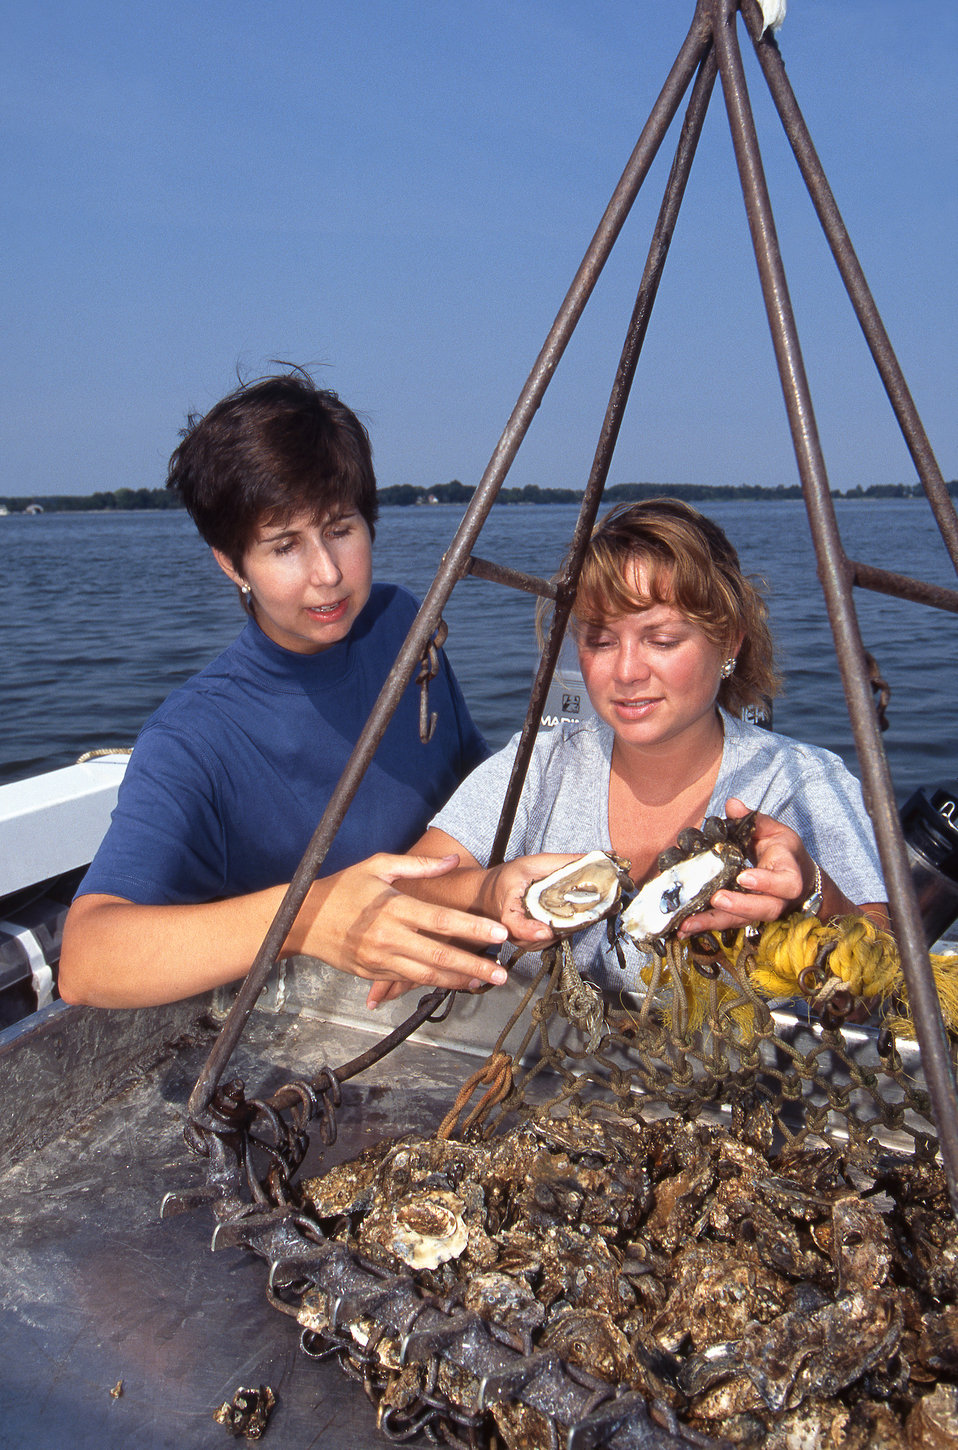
Oysters collected from the Choptank River by U.S. Department of Agriculture (USDA) Agricultural Research Service (ARS) chemists Laura McConnell and Jennifer Harman-Fetcho will be analyzed for agricultural chemicals.